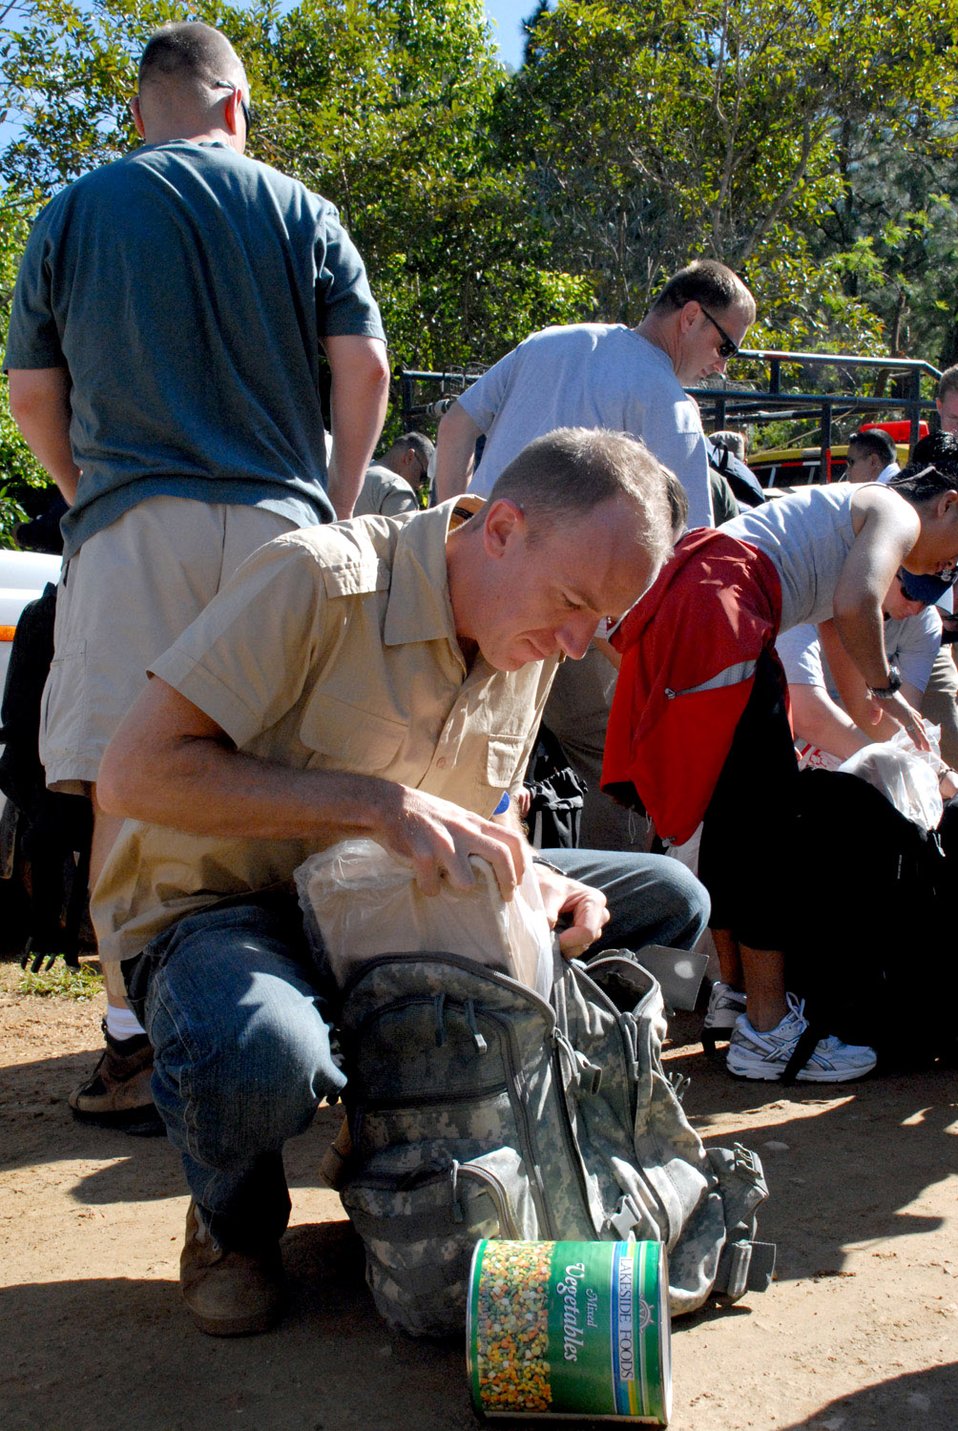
Celebrating Thanksgiving in a whole new way

Army Sgt. Eric Gustafson loads donated food into his ruck sack prior to a mountain hike Nov. 17 at La Sampedrana, Honduras. Airman, Soldiers and Sailors from Joint Task Force-Bravo at Soto Cano Air Base, Honduras, hiked five and a half miles up the mountain here to deliver more than 600 pounds of food to local villagers. The hike is the third in a series of five sponsored by the JTF-Bravo Chapel.